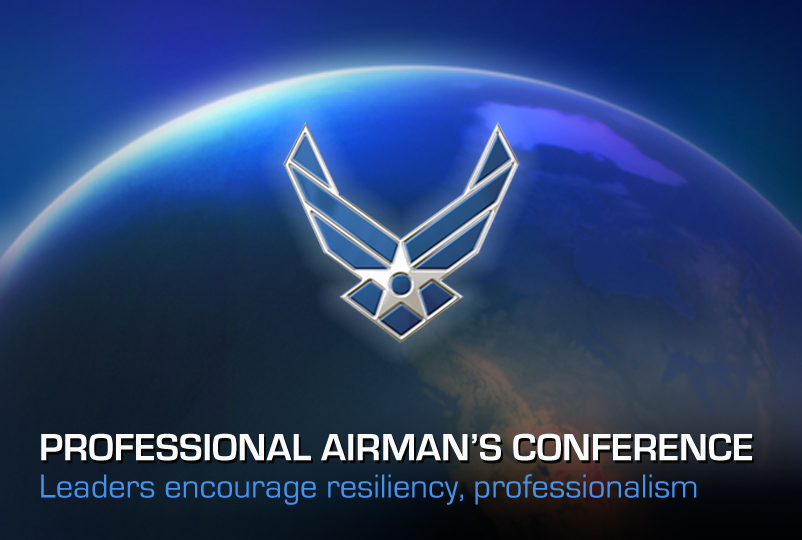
Professional Airman's Conference